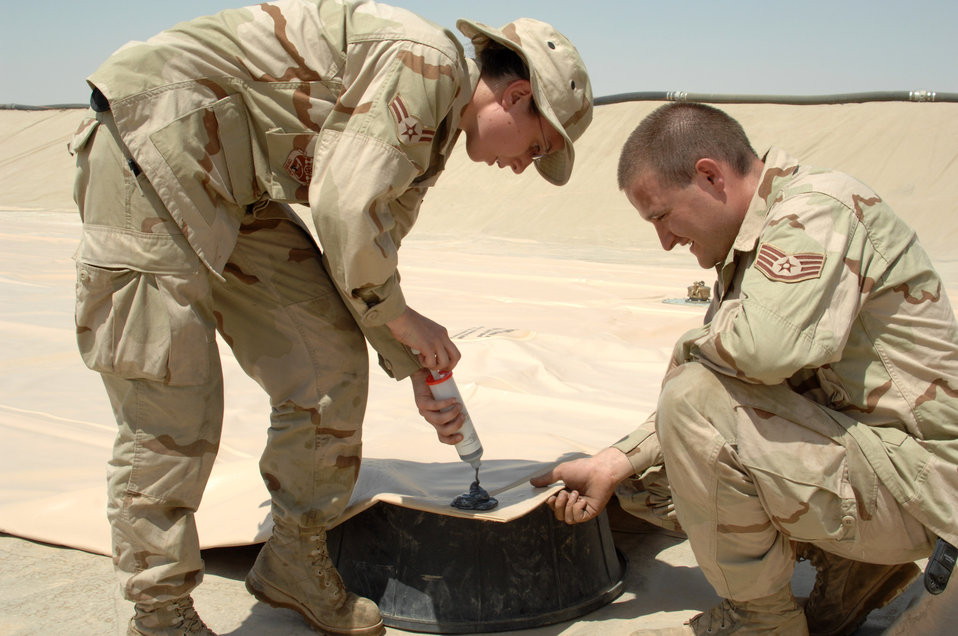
Kirkuk Airmen upgrade fuel storage

Airman 1st Class Sarah Sarten and Staff Sgt. Mark Chance seal the corners of a new fuel bladder June 19 at Kirkuk Regional Air Base, Iraq. The bladder will be filled with JP-8 jet fuel. Fuel storage bladders are collapsible, flexible storage containers that provide temporary as well as long term fuel storage. Airman Sarten and Sergeant Chance are with the 506th Expeditionary Logistics Readiness Squadron.